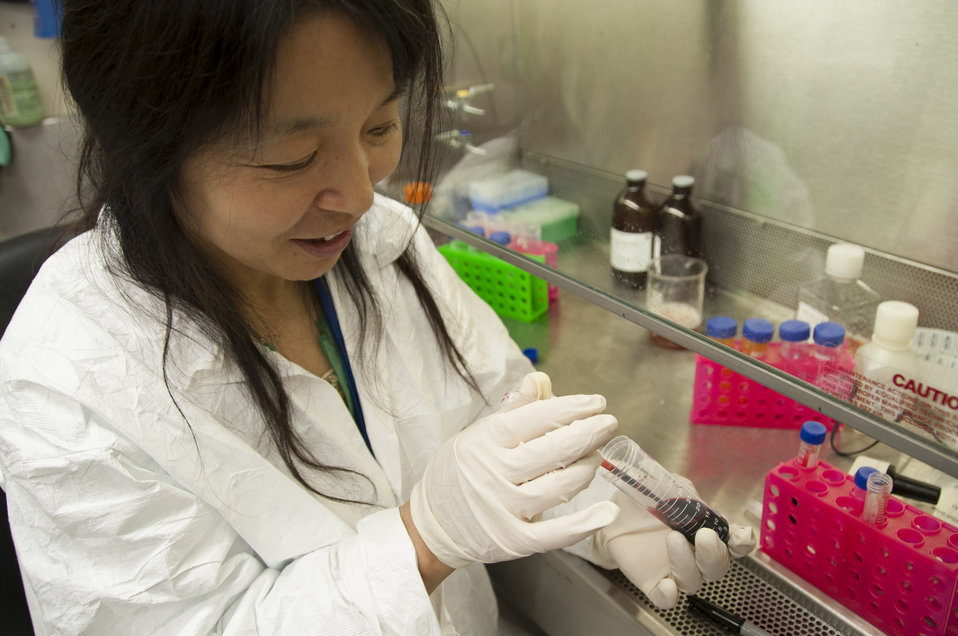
Blood Research: Saving Lives (8580)

Meihong Liu, Ph.D., processes red blood cells in preparation for freezing for long term storage. Red blood cells for transfusion can be stored as a liquid for up to six weeks. FDA is responsible for the safety of our nation’s blood supply and is at the forefront of evaluating and encouraging innovative technologies for protecting it.

Read this Consumer Update to learn more: Advances in Saving Lives with Blood